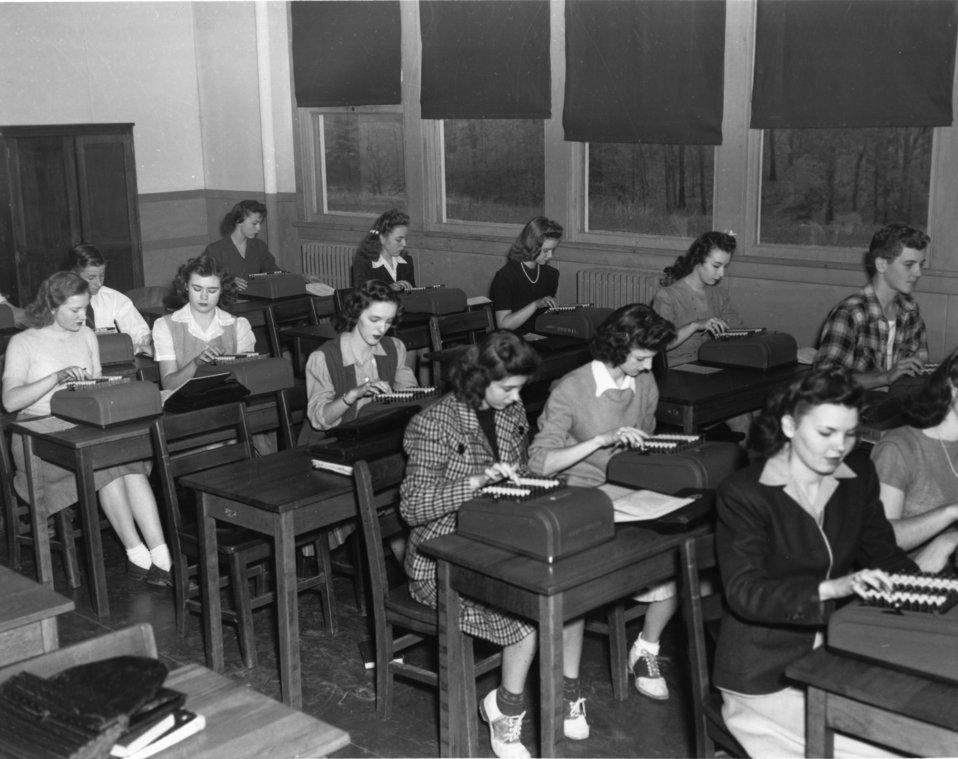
Schools at Oak Ridge